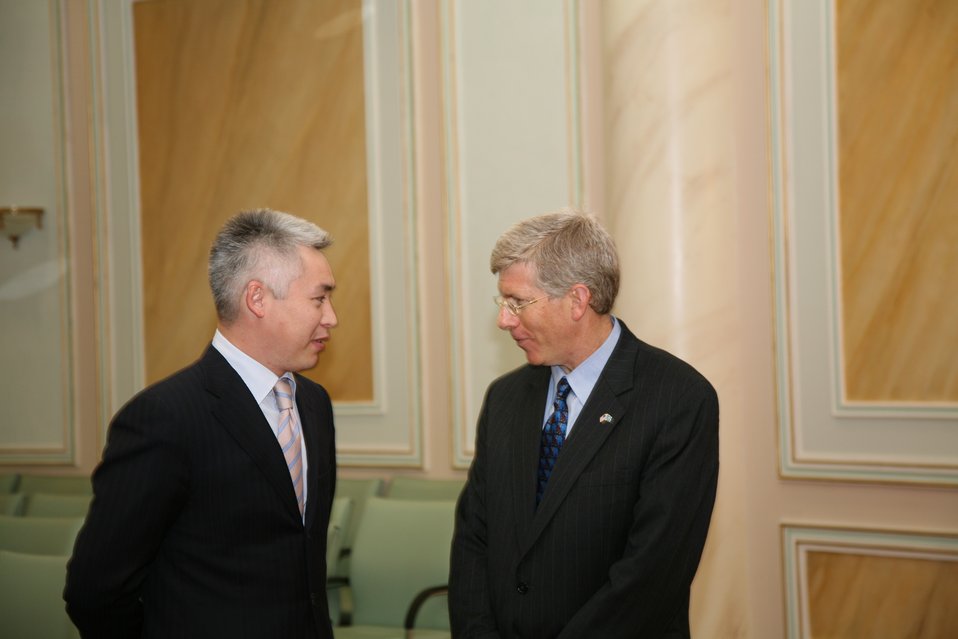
Kazakhstan 1